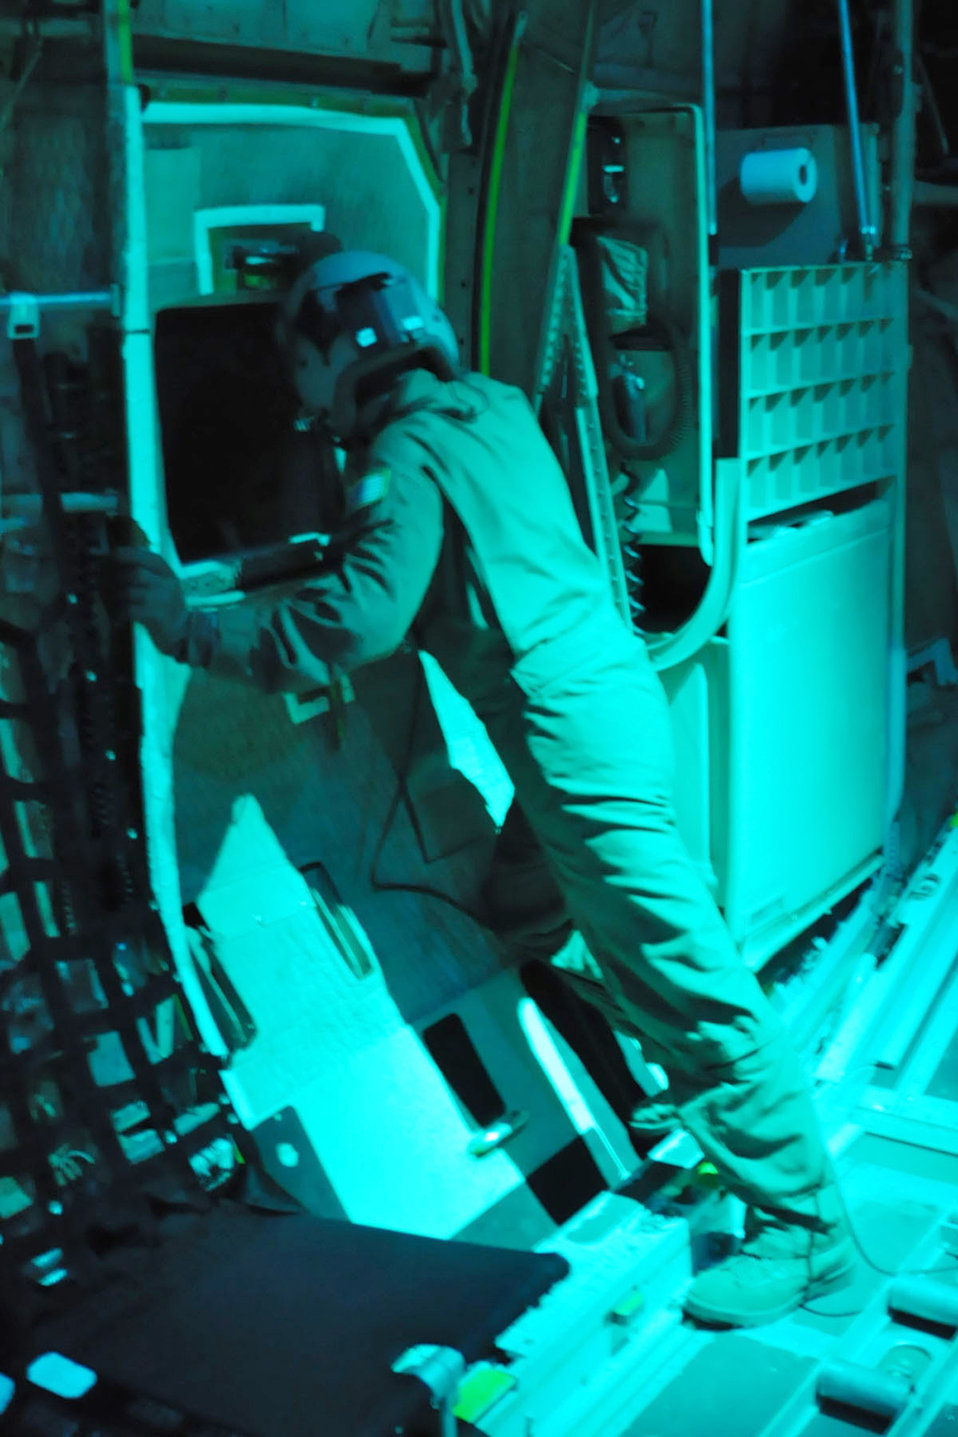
Medical mission to Haiti

Staff Sgt. Michael Culp uses night vision goggles to look out over Honduras on an airlift mission in support of the massive international effort to aid the Haitian people Jan. 17, 2010. Sergeant Culp is among a 12-person crew aboard the C-130H Hercules assigned to the Air Force Reserve Command's 910th Airlift Wing based out of Youngstown Air Reserve Station, Ohio, bound for Soto Cano Air Base, Honduras to pick up cargo.